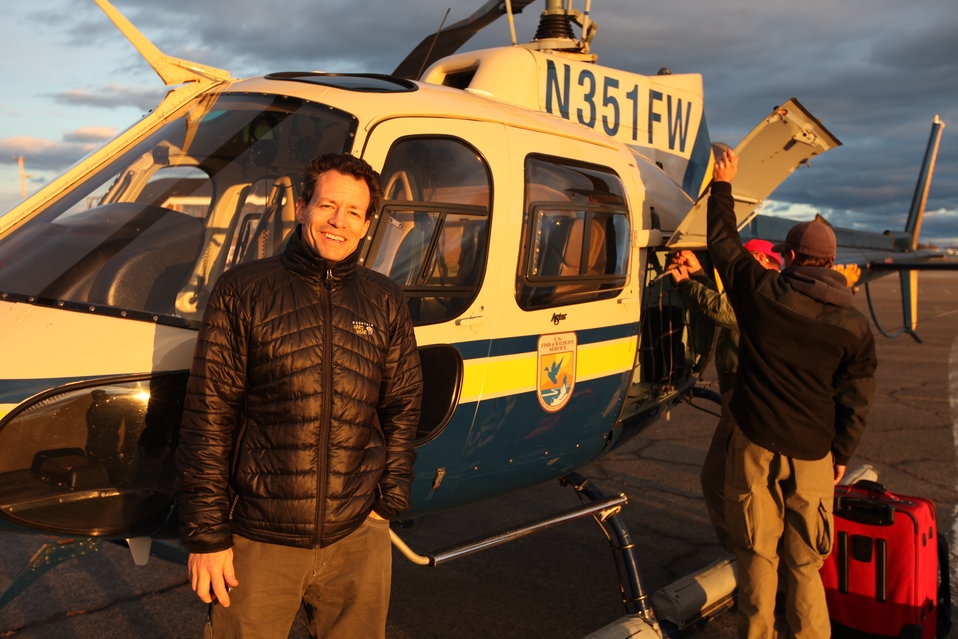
Evan Hirsche, former President of National Wildlife Refuge Association and lifelong advocate of our National Wildlife Refuge system with the U.S. Fish and Wildlife Service helicopter crew.